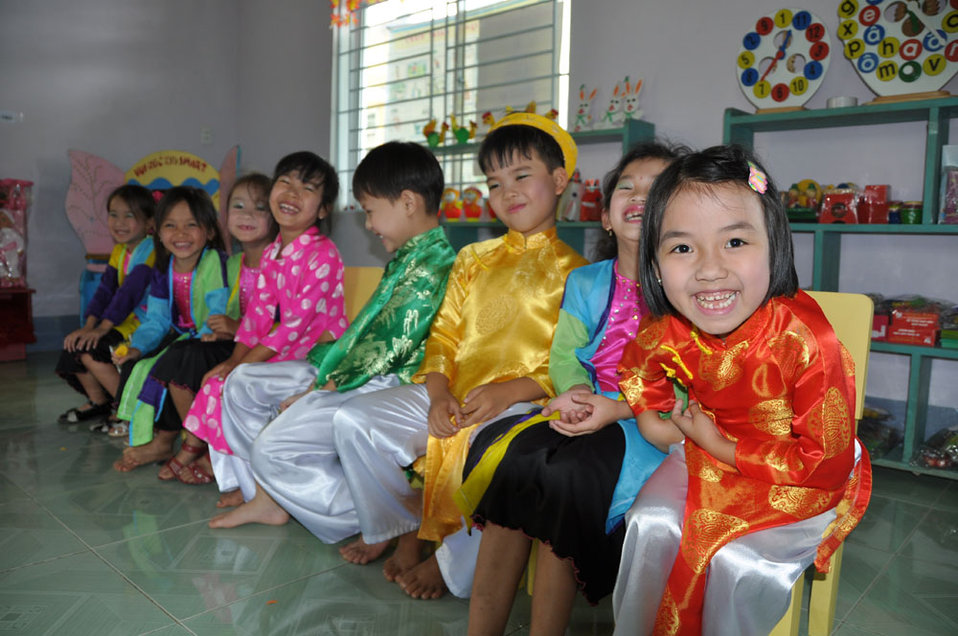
Children in Kon Tum, Vietnam, enjoy their new pre-schools refurbished with USAID funding